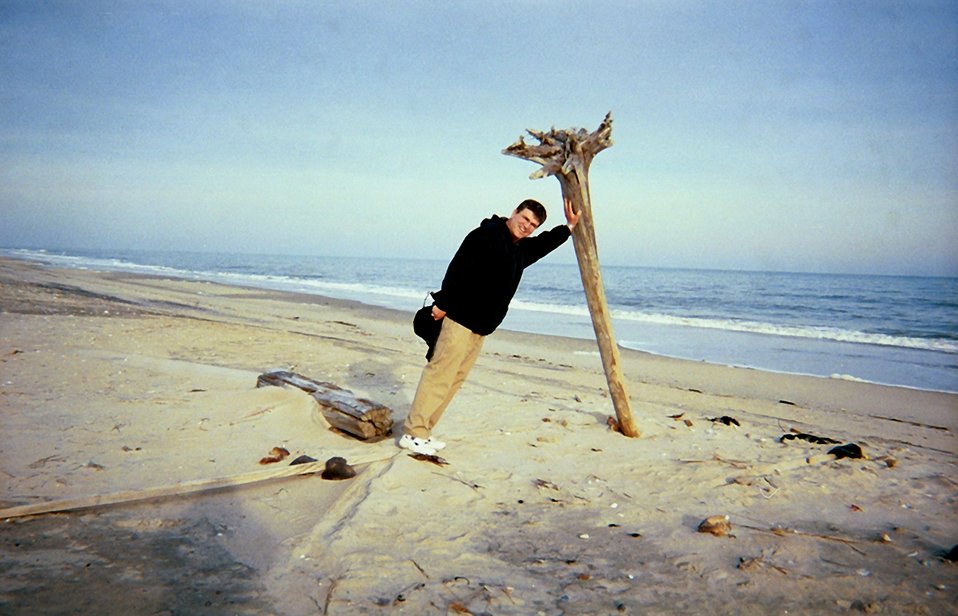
I am not a square. In fact, I am part of a triangle.